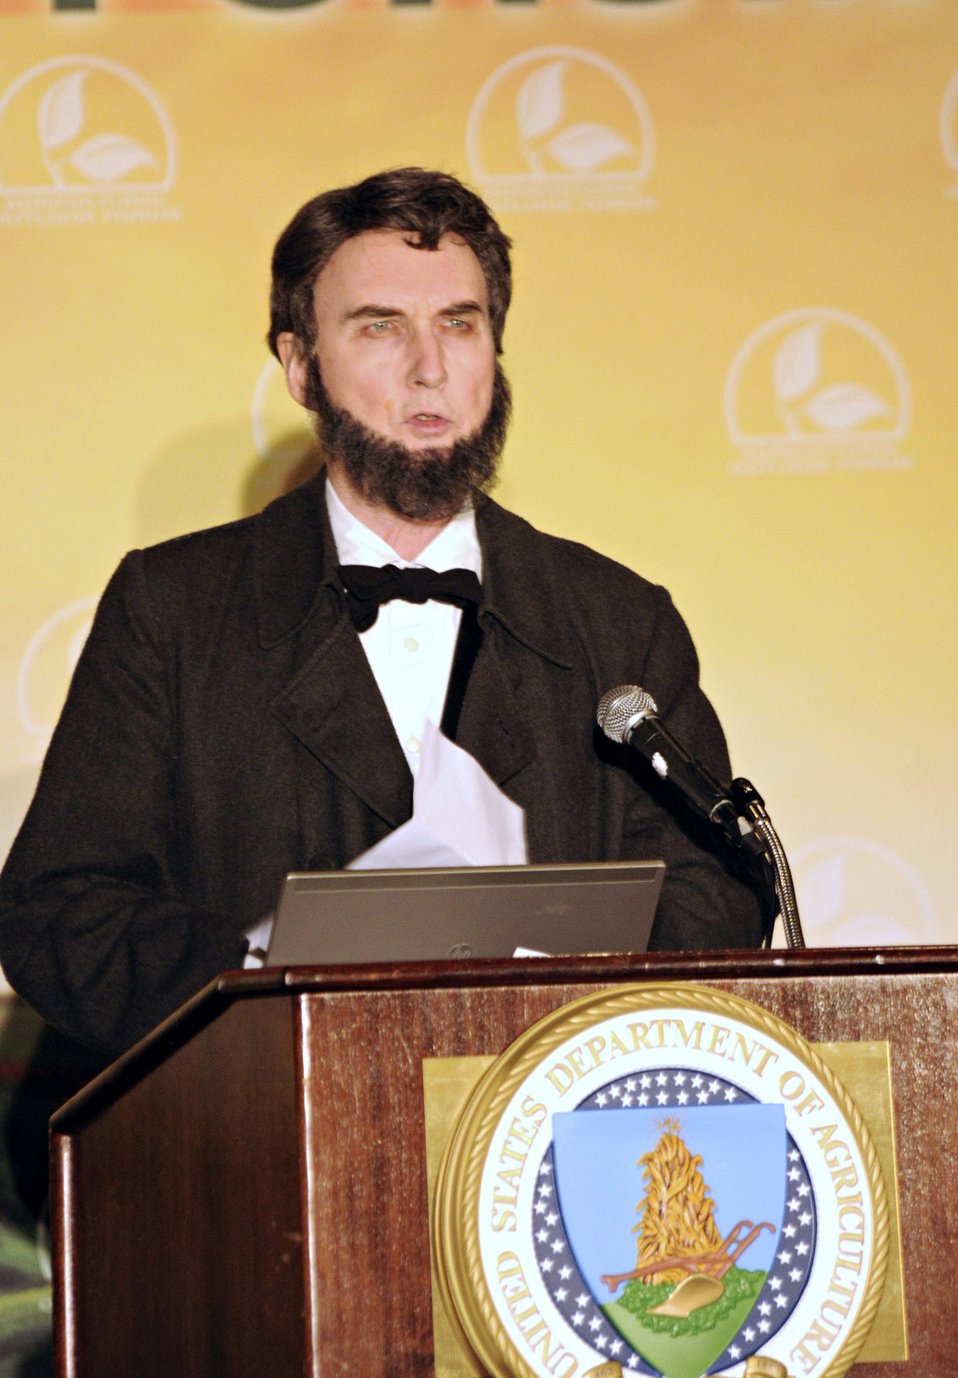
An Abraham Lincoln impersonator makes remarks at the 2012 Agricultural Outlook Forum, “Moving Agriculture Forward” in Arlington, VA.. on Thursday, February 23, 2012.